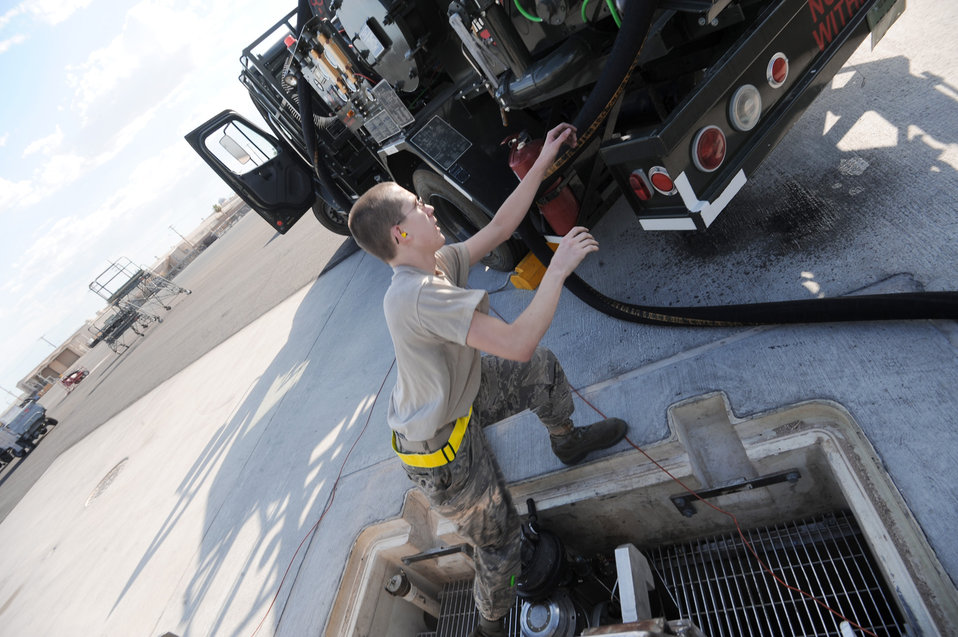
Realistic training with Red Flag

Airman 1st Class Timothy Grusendorf off loads fuel July 17 during Red Flag 09-4 at Nellis Air Force Base, Nev. Red Flag is a realistic combat training exercise involving the air forces of the United States and its allies, and administered by the U.S. Air Force Warfare Center and Nellis AFB. Airman Grusendorf is a fuels specialist with the 99th Logistics Readiness Squadron